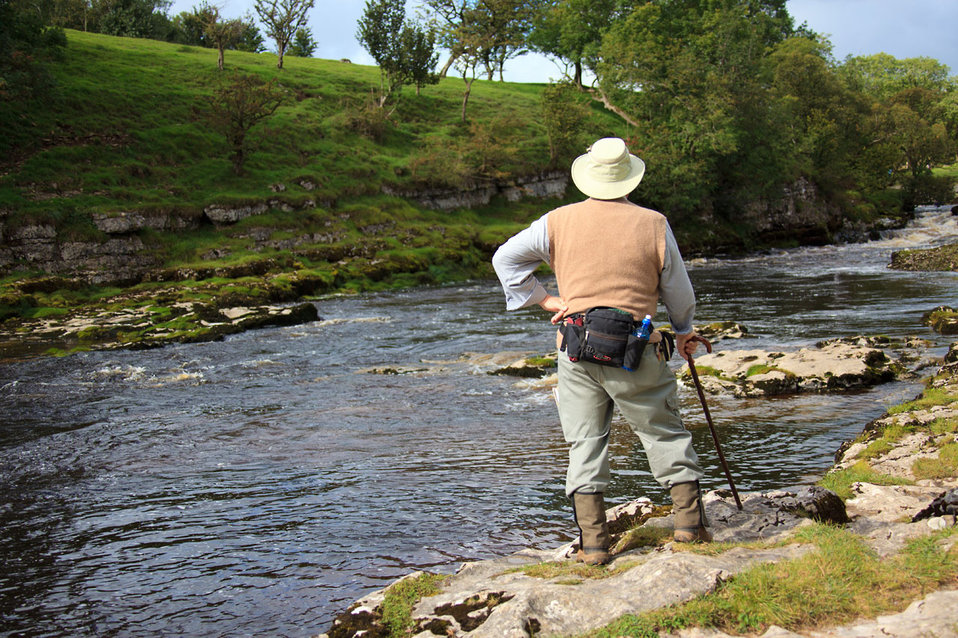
Adventurer looking at his new challenge.